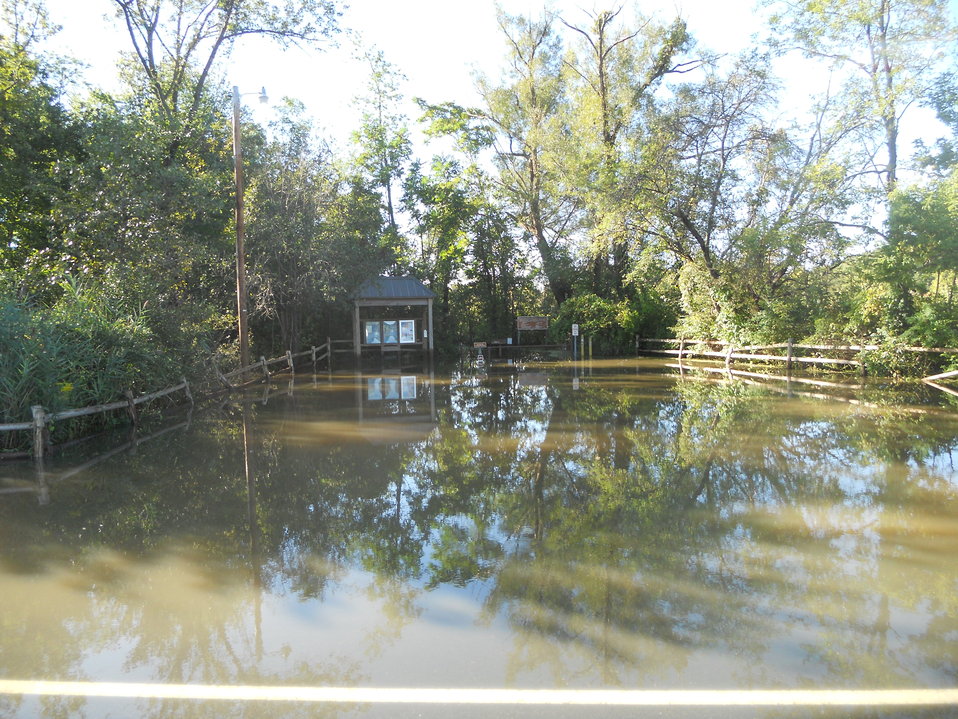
Hurricane Damage at Wallkill River National Wildlife Refuge August 30, 2011

Flooding at Wood Duck Trail, Sussex, NJ.